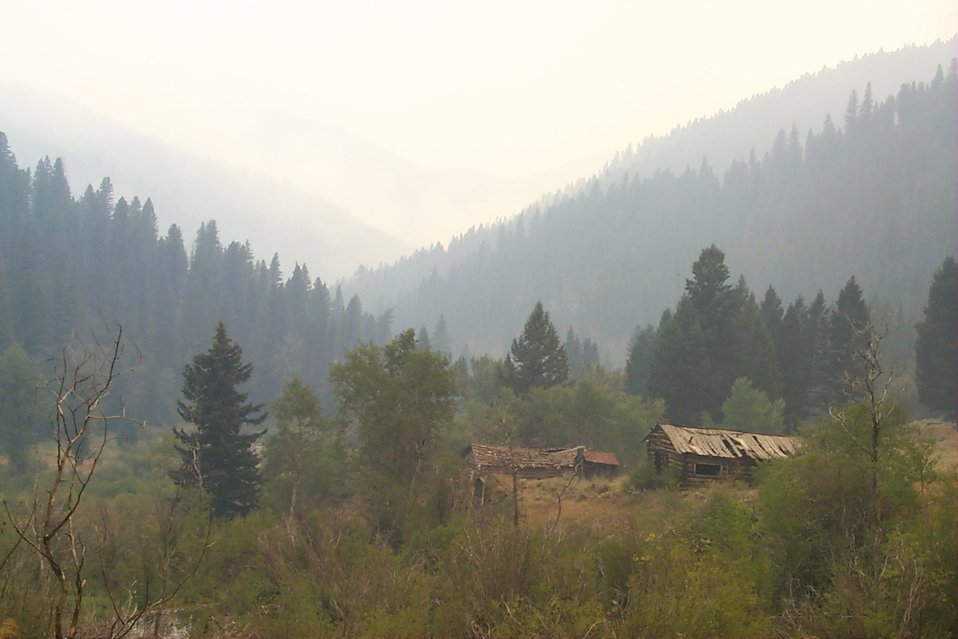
Urban interface Fire Clearwater Fire Salmon Field Office USRD Upper Snake River District